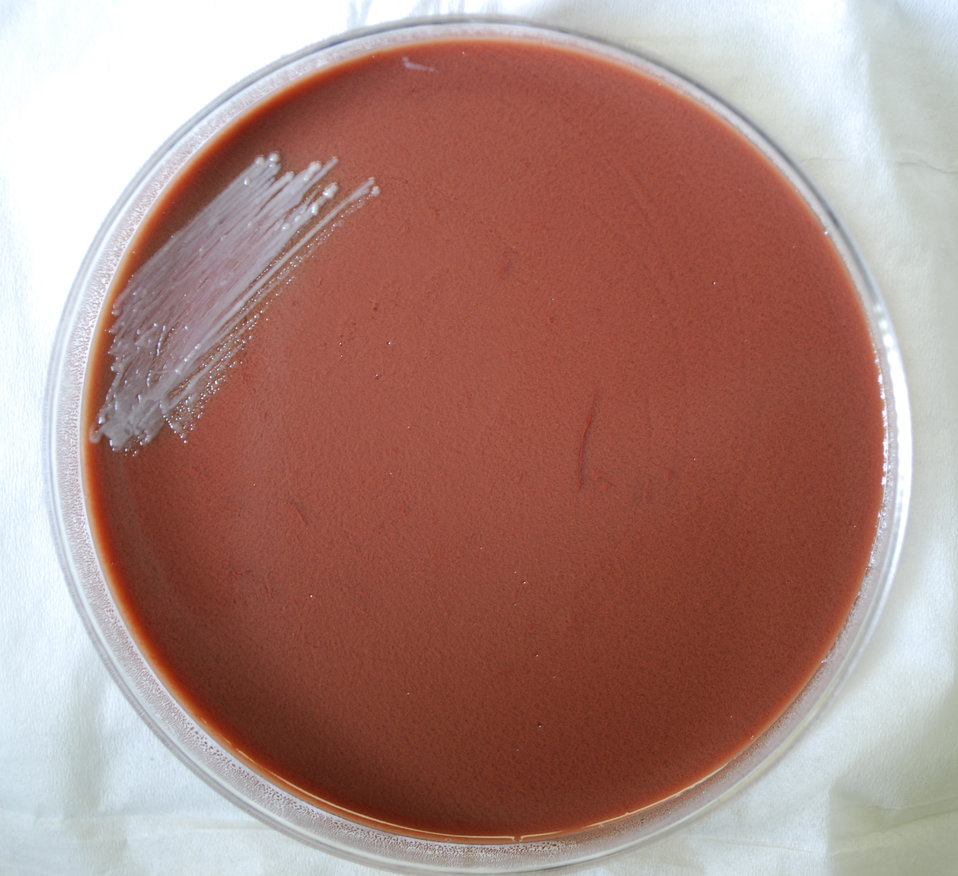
This photograph depicts the colonial morphology displayed by Gram-negative Francisella tularensis bacteria, which is the pathogen responsible for causing the disease tularemia. These colonies were grown on a medium of cysteine heart infusion agar (CHAB), for a 24 hour time period, at a temperature of 37�C. See PHIL 12220, for a closer view of these bacterial colonies.